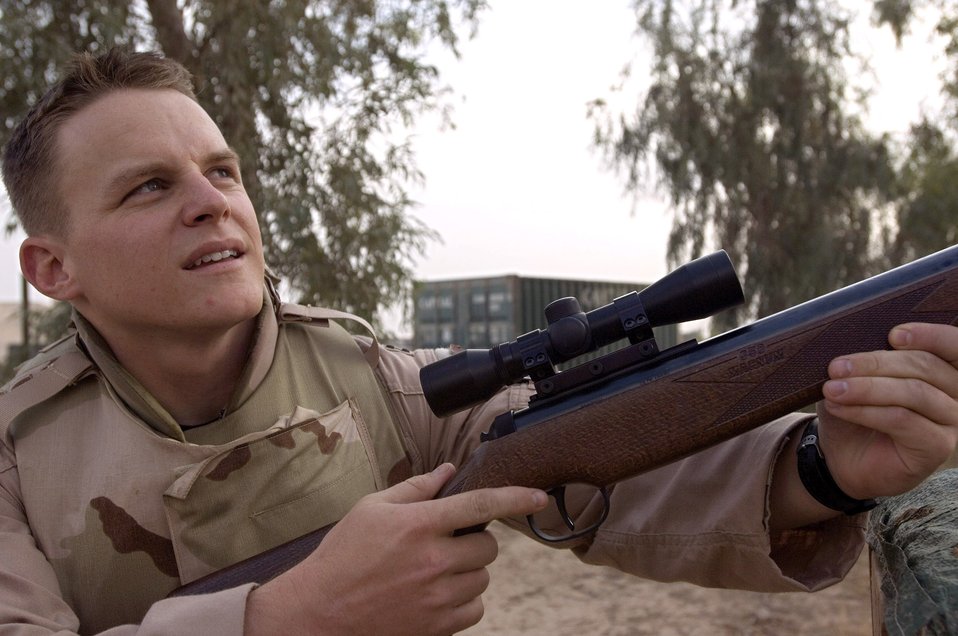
Protecting the flightline

BALAD AIR BASE, Iraq (AFPN) -- Capt. Steve Graham has his sights set on to eliminate hazards around the flightline. He is using a .177 caliber pellet gun as part of the Bird Aircraft Strike Hazard (BASH) program here with the 332nd Air Expeditionary Wing. Captain Graham is deployed from the 13th Fighter Squadron at Misawa Air Base, Japan.